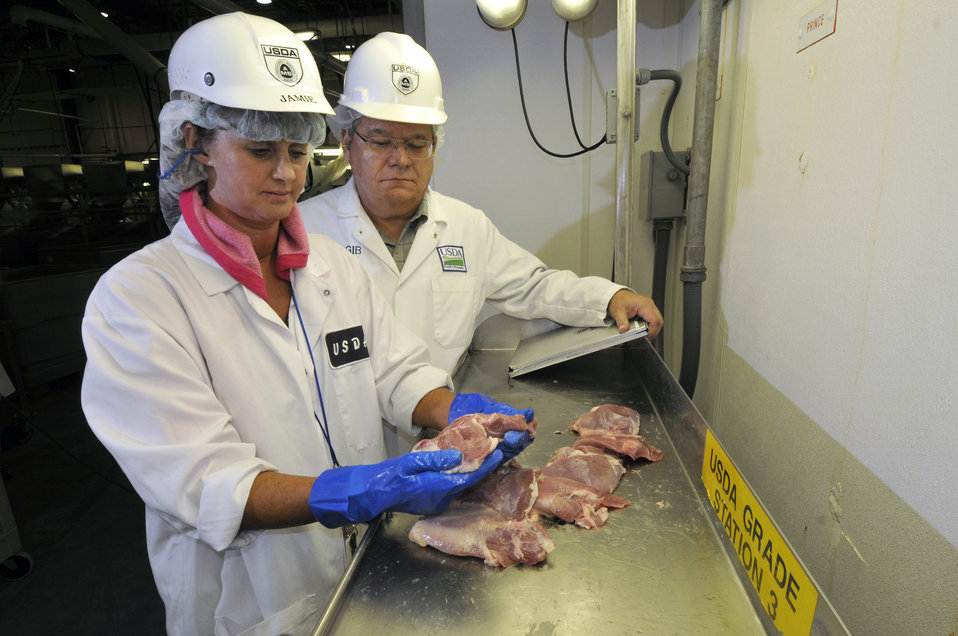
U.S. Department of Agriculture (USDA) Agricultural Marketing Service (AMS) Poultry Programs Relief Grader Jamie Guerrero grades boneless/skinless turkey thigh meat in the Butterball, LLC Company in Huntsville, Arkansas on March 23, 2010. Chickens, turkeys, ducks, geese, guineas, and pigeons are all eligible for grading and certification services provided by the USDA AMS Poultry Programs’ Grading Branch. These services are provided in accordance with Federal poultry grading regulations.